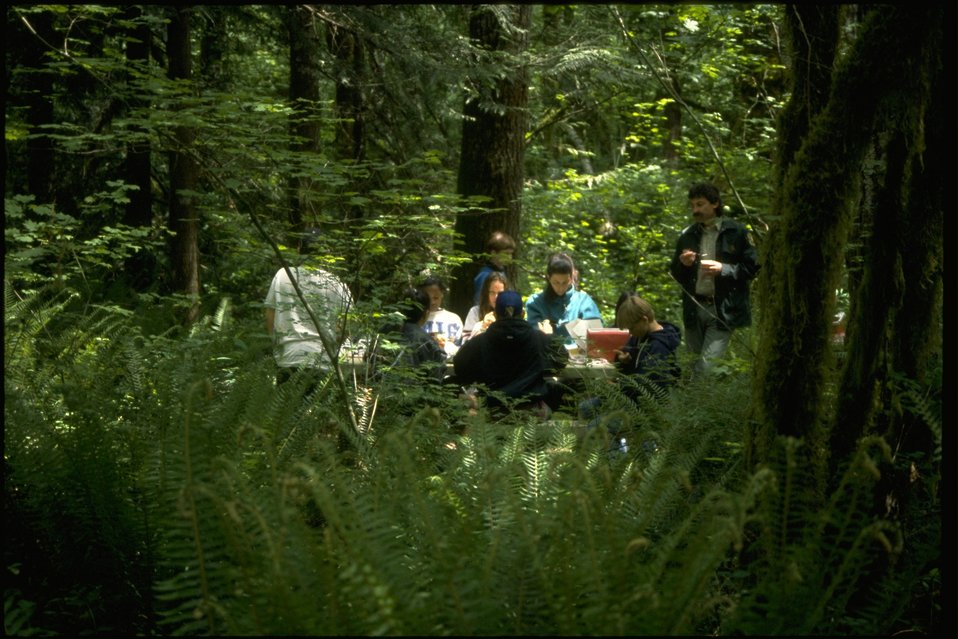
Kids from the Cascade Stream Watch Program have a picnic at the Wildwood Recreation Site.